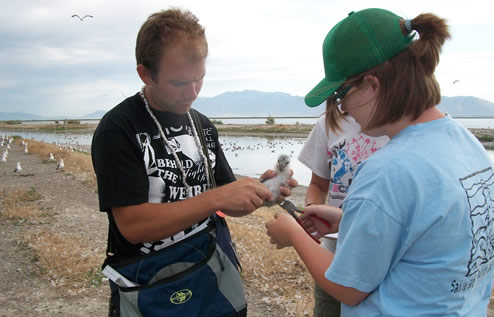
Banding chicks

Youth Conservation Corps crew assist Weber State University students with bird banding. The crew assisted Weber State University professor, John Cavitt, and his students to conduct research on Snowy Plover, Cliff Swallows, California Gulls, Great Blue Herons, and White-Faced Ibis throughout the season.